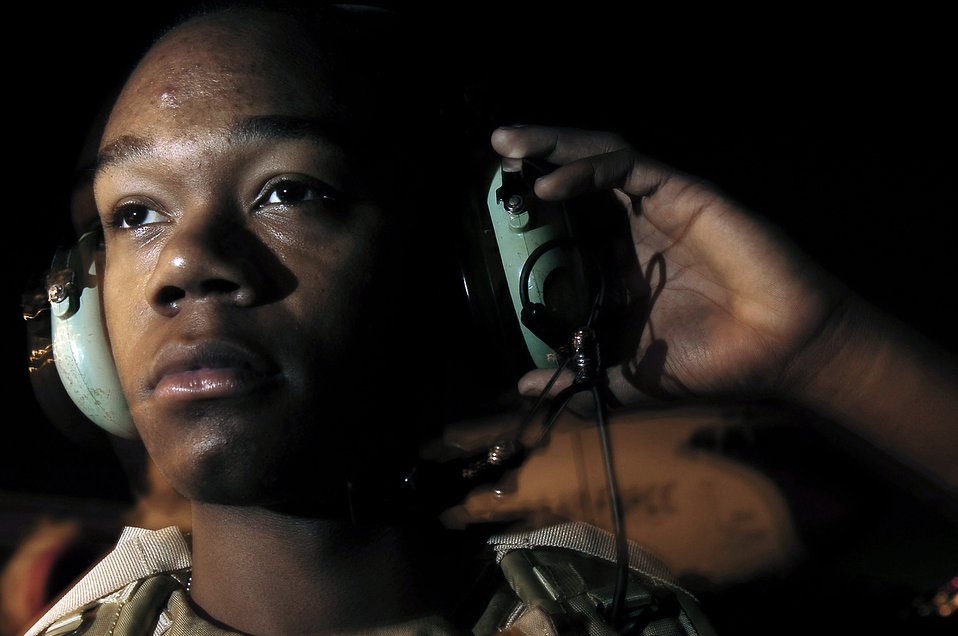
The tension mounts

Senior Airman Anthony McCall adjusts his headset during an operational readiness exercise July 31st at the Combat Readiness Training Center in Gulfport, Miss. Airman McCall is an avionics technician deployed from the 6th Air Mobility Wing.